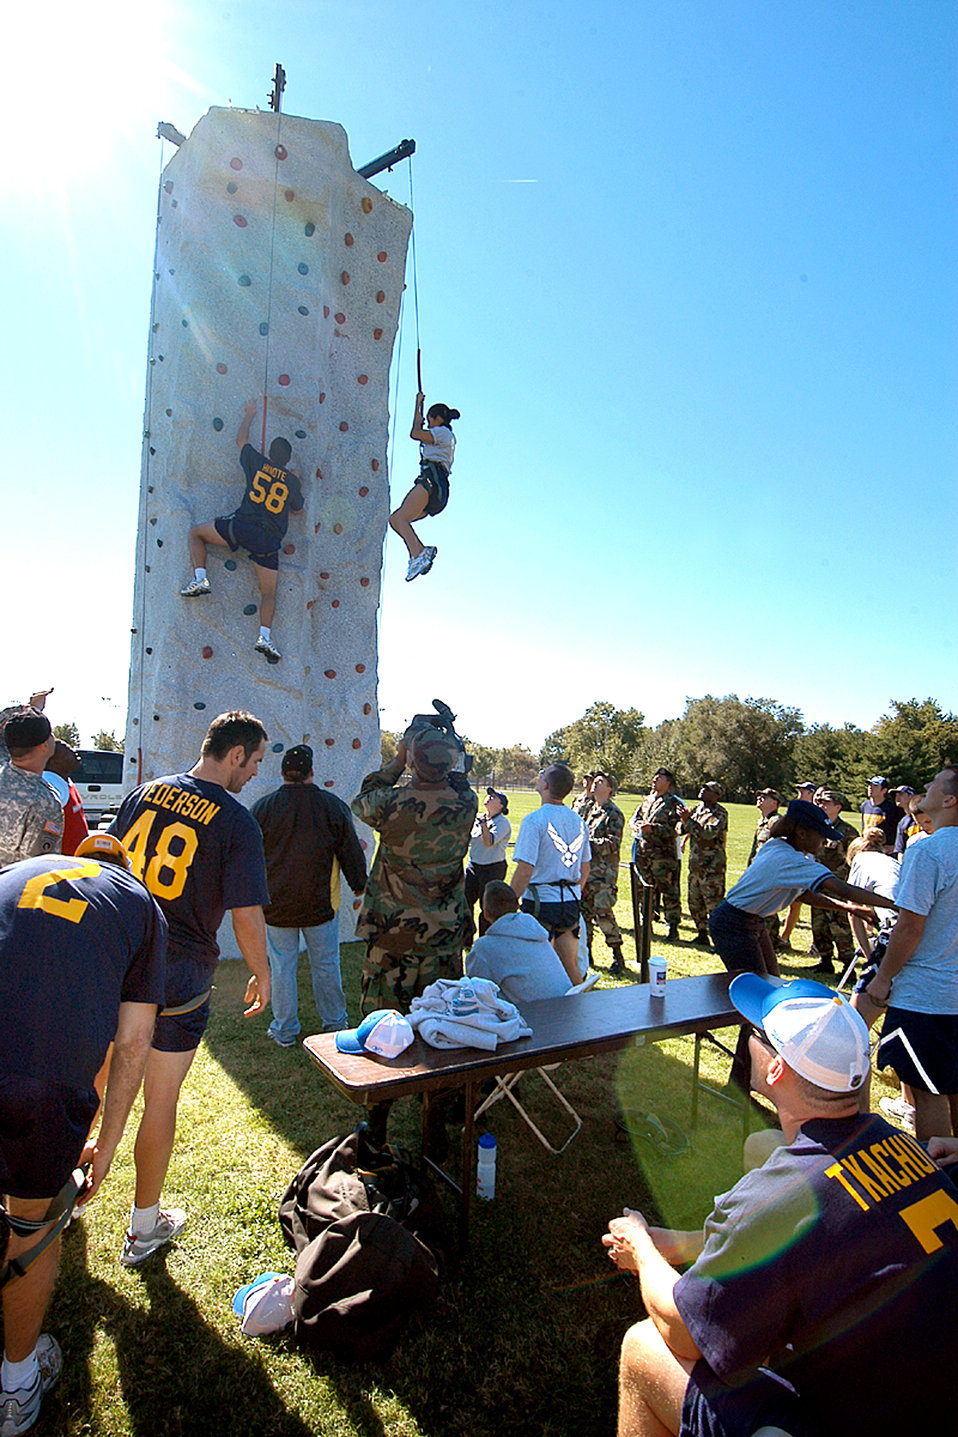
Scott Airmen come down with the Blues

Members of the St. Louis Blues hockey team compete with Airmen on the climbing wall as part of team building and leadership field exercises at Scott Air Force Base, Ill., Sept. 26.